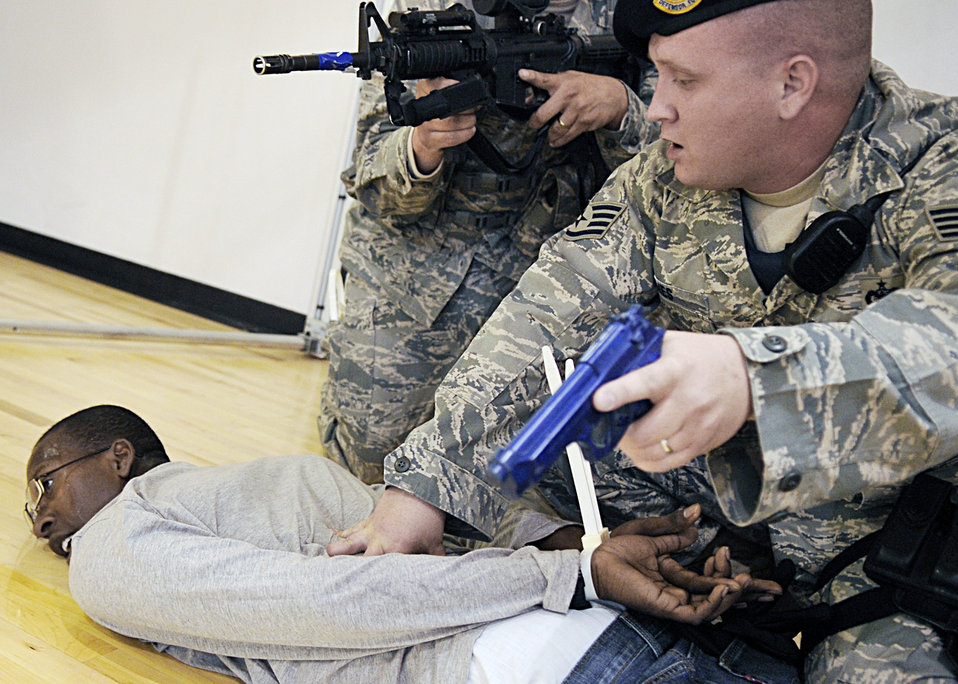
Holloman Airmen train for worst in active shooter exercise

Staff Sgt. Craig Ames detains a simulated suspect after doing a building sweep of the Domenici Fitness and Sports Center March 11, 2010, at Holloman Air Force Base, N.M. Sergeant Ames is assigned to the 49th Security Forces Squadron.